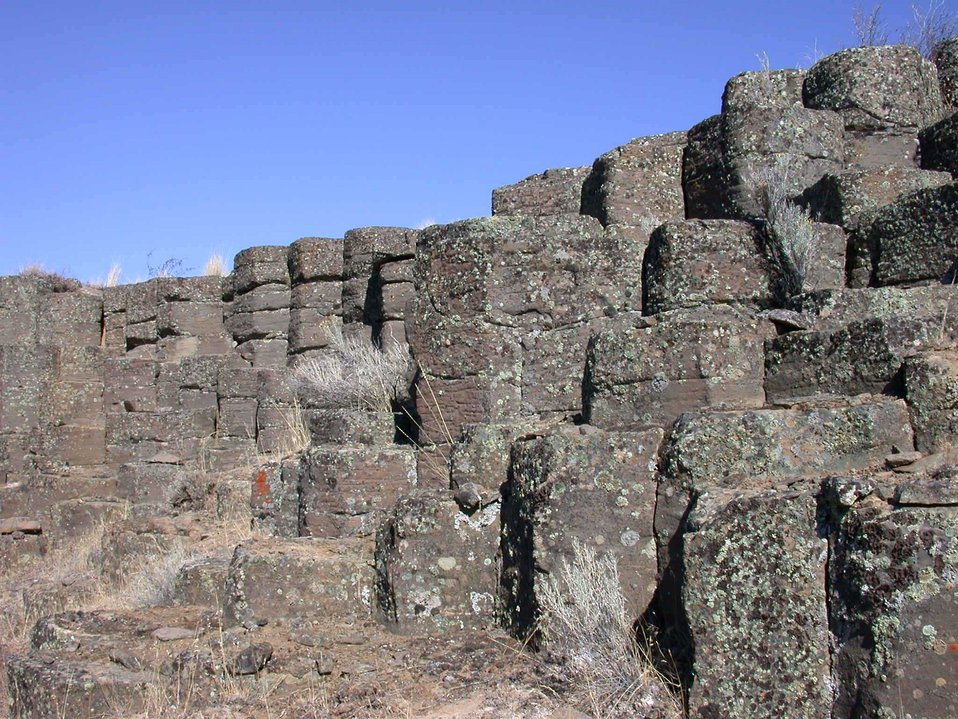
Public Lands Day Sprague geologic tour of columnar basalt ridge in Lake Missourla Flod Channels.